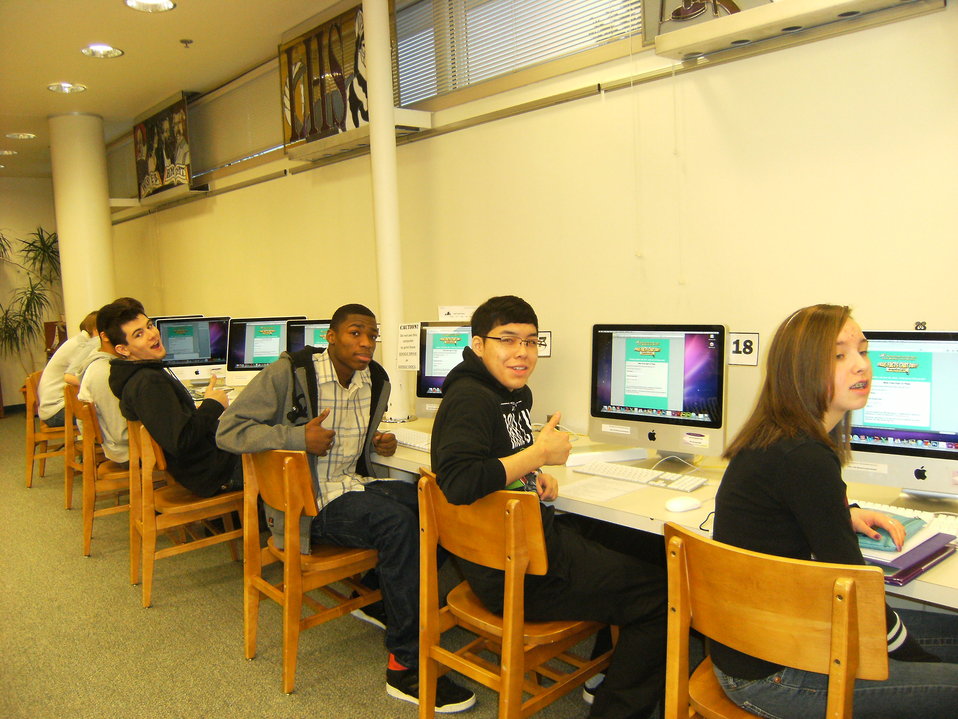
Alaska Teens Test Their Drug Facts IG

Students Against Destructive Decisions (SADD)
presented an assembly with guest speaker Amy Bollaert, Coordinator of the Fairbanks Prevention Coalition, as part of SADD's 'Signature Events' program in Fairbanks, Alaska